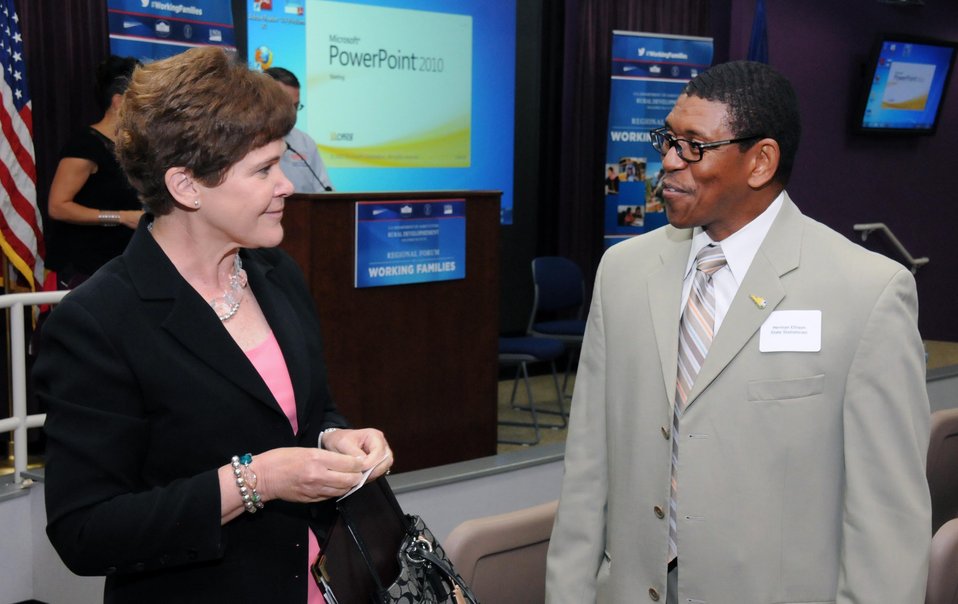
Agriculture Deputy Secretary Krysta Harden meets with State Statistician Herman Ellison at the White House Summit on Working Families in Petersburg, VA on Wednesday, Jun. 11, 2014. The forum brings together stakeholders with government and regional leaders to identify initiatives for working families and businesses in rural areas. This forum is part of a series of regionally hosted conversations leading up to the Jun. 23, 2014 White House Summit on Working Families.